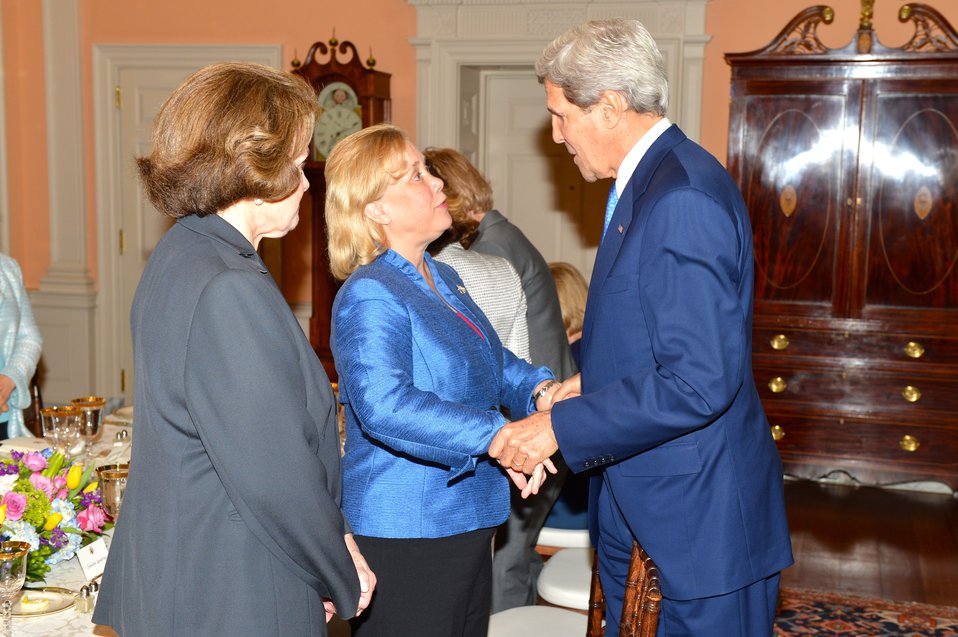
Secretary Kerry Greets Senator Landrieu

With Senator Dianne Feinstein looking on, U.S. Secretary of State John Kerry greets Senator Mary Landrieu during a reception and dinner he hosted for female Senators at the U.S. Department of State in Washington, D.C., on May 13, 2014.